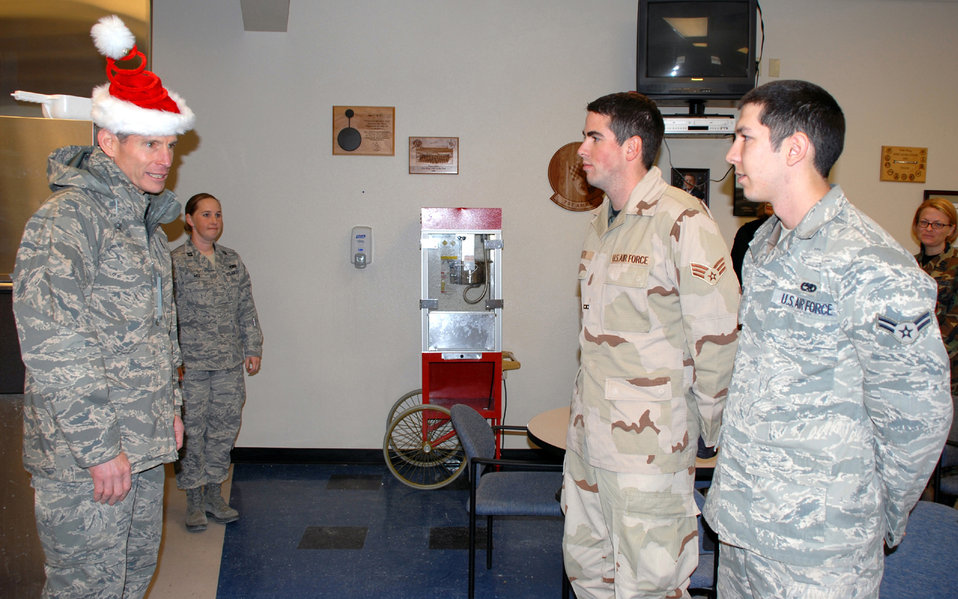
CSAF, Mrs. Schwartz visit Creech AFB

Gen. Norton Schwartz, Air Force chief of staff, speaks with Senior Airman James Koth and Airman 1st Class Trevor Vera, assigned to the 432d Aircraft Maintenance Squadron at Creech Air Force Base, Nev., during a Christmas day visit. General Schwartz and his wife Suzie visited Creech to thank Airmen for their support to the war on terrorism.